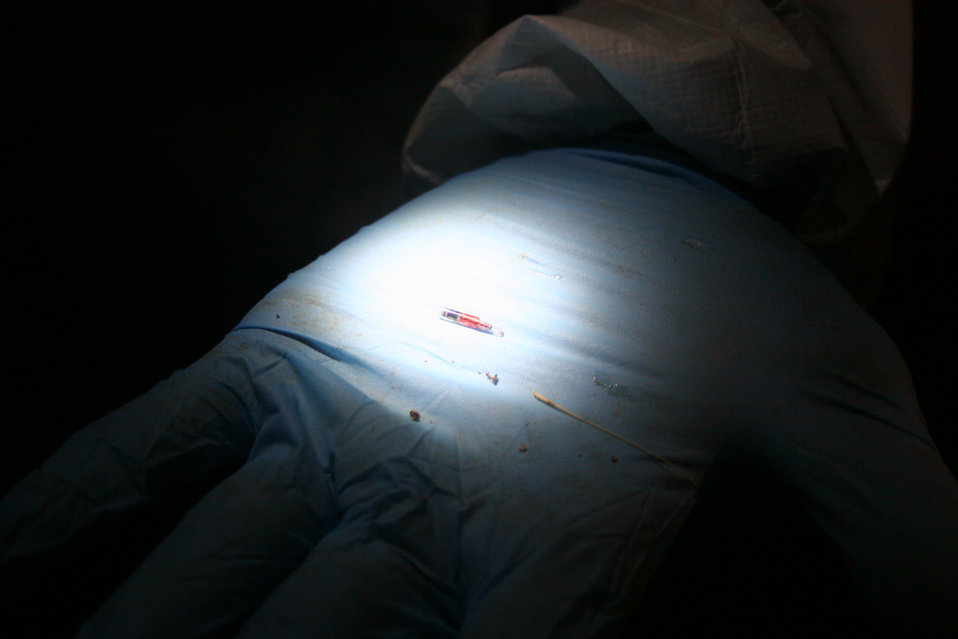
Biologist holds pit tag

Some research studies insert pit tags under the back skin of bats to track their movement. This pit tag was found among the bat bones in Mt. Aeolus Cave, and biologists may be able to use it to track where the bat that had been carrying it came from.